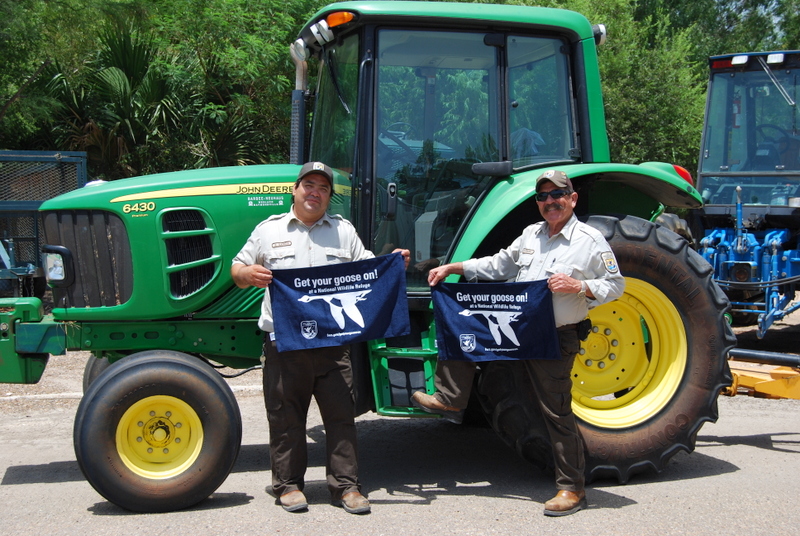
Get Your Goose On!

Photo taken at Santa Ana National Wildlife Refuge in southern Texas.